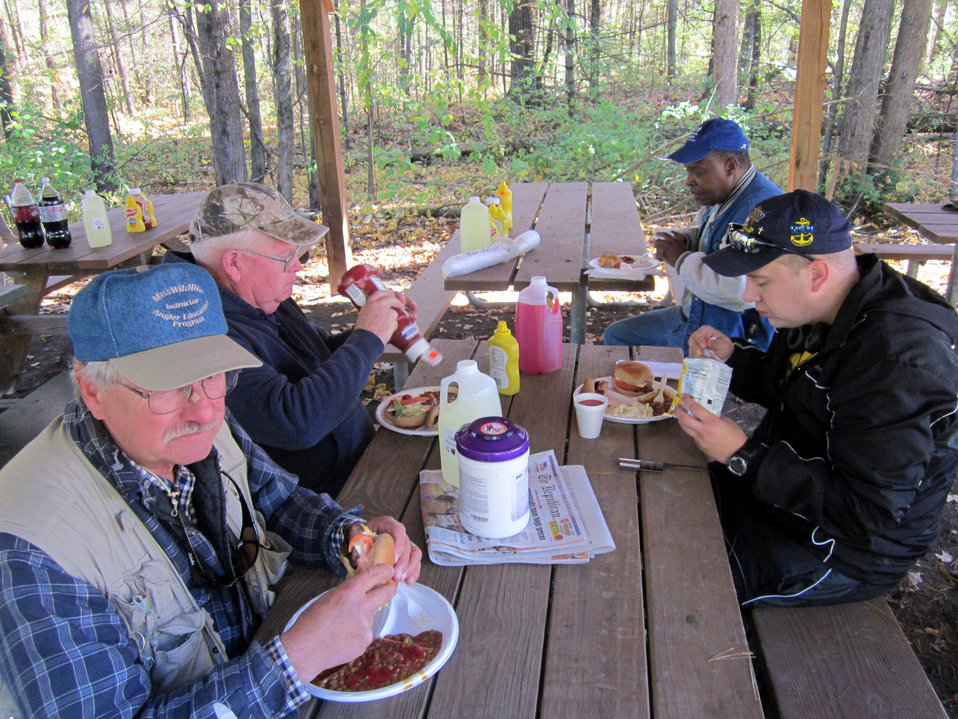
Taking a break to eat

October 13, 2012, Sunderland, MA: Fishermen pause to enjoy a barbecue lunch at a fishing event for veterans at the U.S. Fish and Wildlife Service's Richard Cronin National Salmon Station.